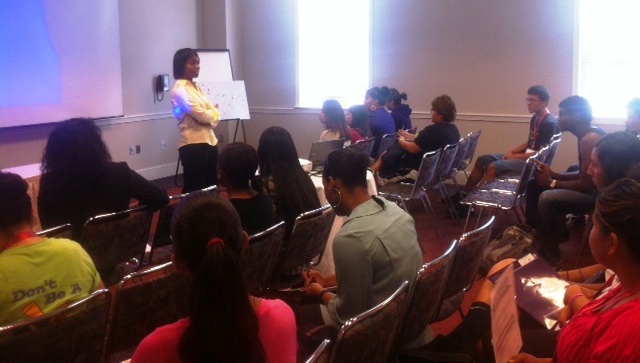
Intertribal Youth Summit: Workshop on STEM Careers

Dot Harris attended the 2012 InterTribal Youth Summit in Maryland to discuss the benefits of STEM education to youth from Tribal Nations around the United States. She was joined on a panel by two very talented engineers: Noller Herbert, a conservation engineer at the U.S. Department of Agriculture’s Natural Resources Conservation Agency, and Stan Atcitty, an engineer with Sandia National Laboratories’ Wind Technology Program. Dot and the panelists discussed their experiences as engineers and the importance of students becoming more interested in STEM.